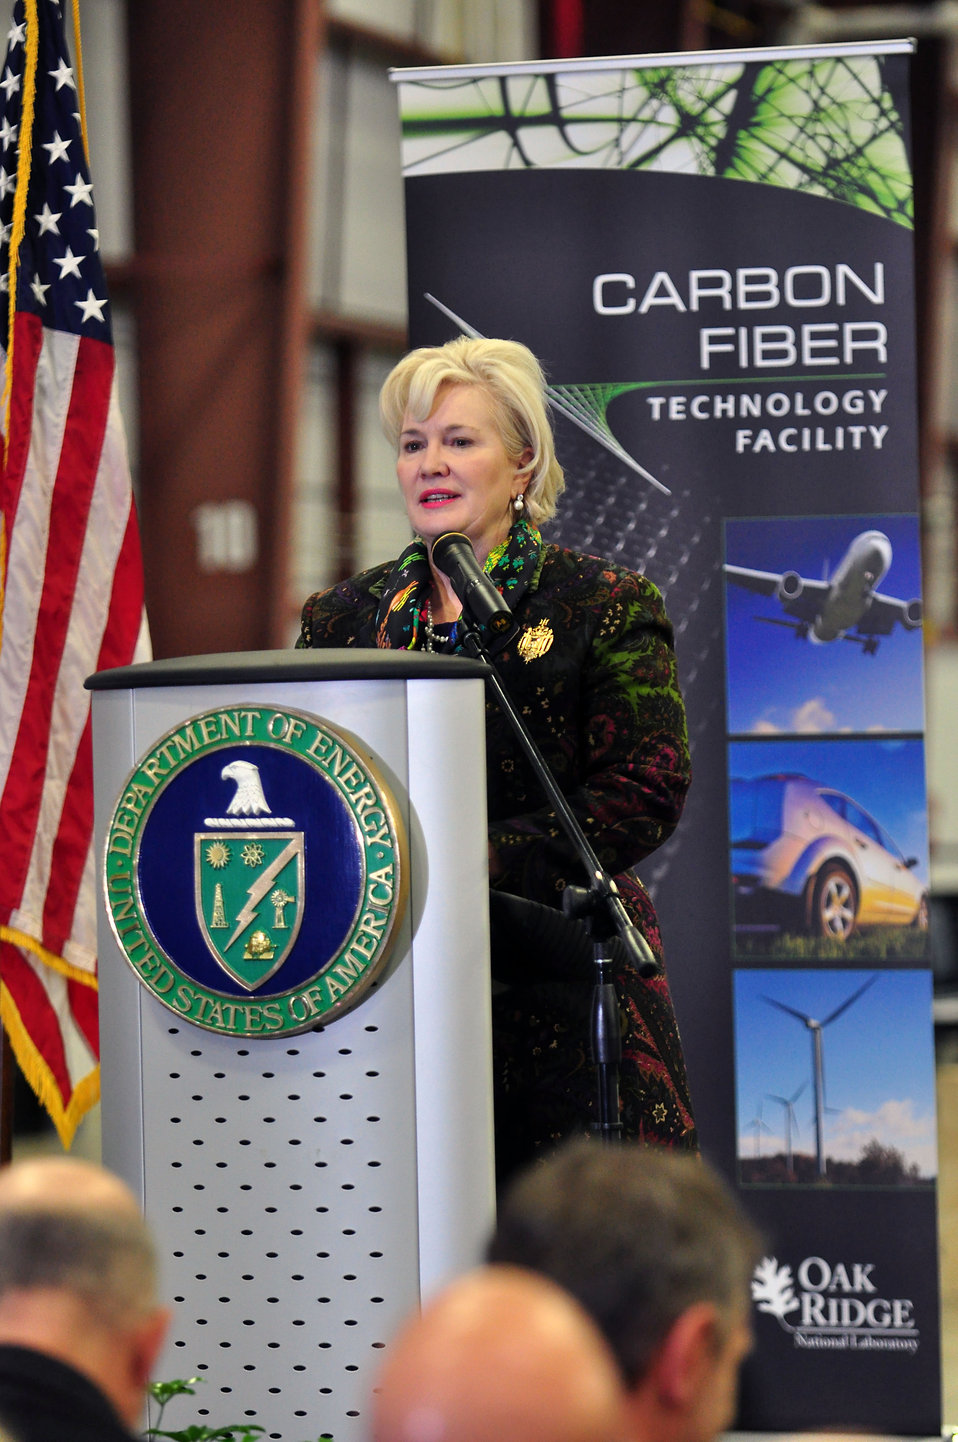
Carbon Fiber Technology Facilty Open House Oak Ridge Tennessee

13-025 DOE photo Lynn Freeny
Council on Competitiveness CEO Deborah Wince-Smith